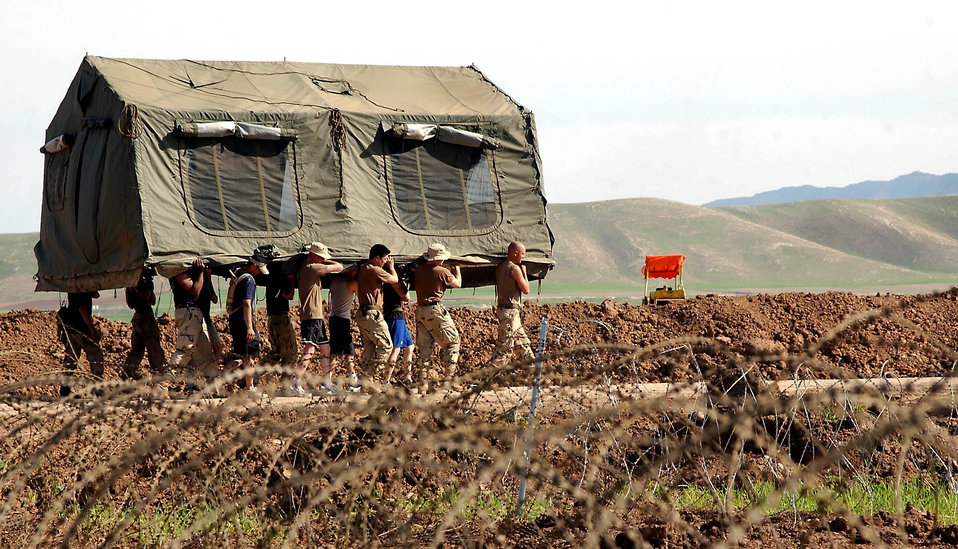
The grass is greener... over there

OPERATION IRAQI FREEDOM -- Airmen of the 786th Security Forces Squadron move their tent to a new spot at Bashur Airfield, Iraq. The 86th Expeditionary Contingency Response Group set up camp around the airfield when it landed there March 26. The group's mission is to land at a bare base and set up airfield operations.